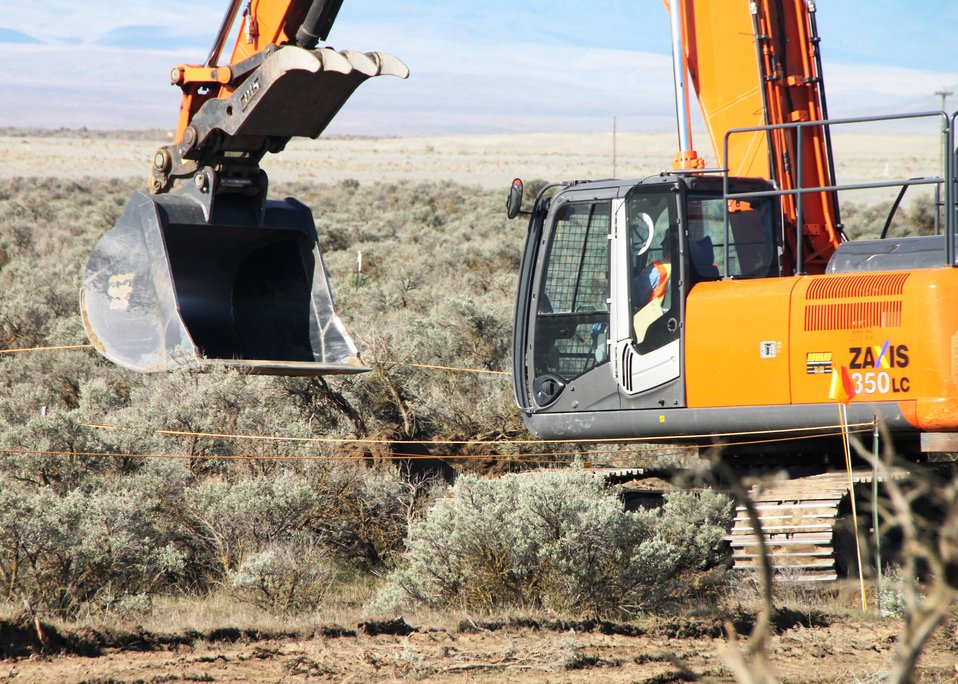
Brookhaven